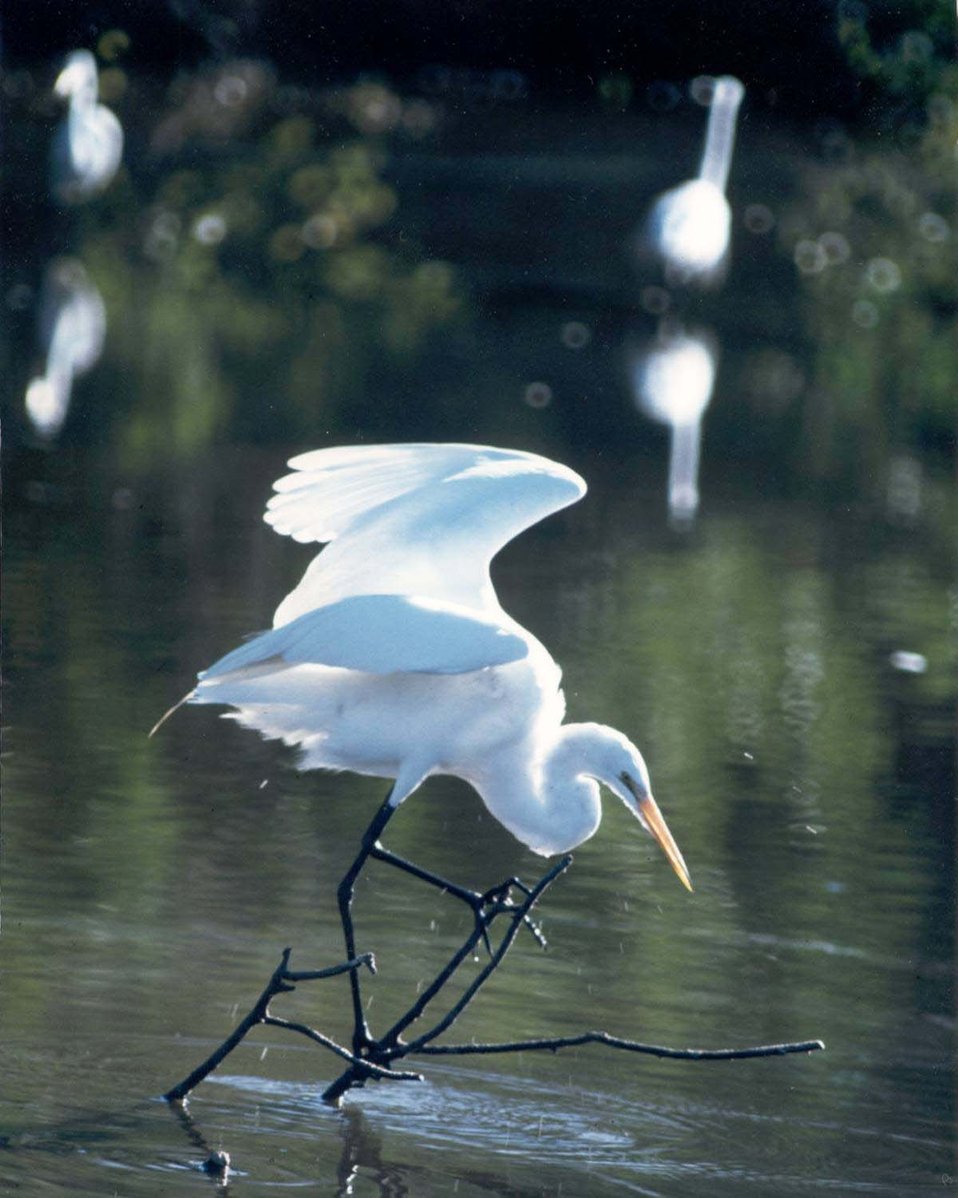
Prime Hook Great Egret

A great egret eyes movement beneath the water at Prime Hook National Wildlife Refuge.